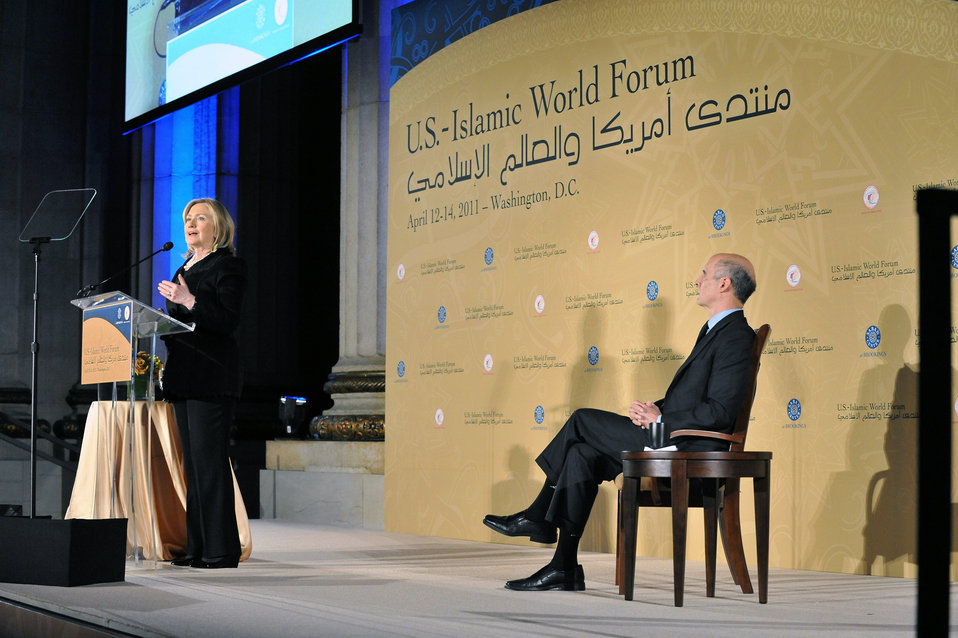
Secretary Clinton Delivers Remarks at U.S.-Islamic World Forum

U.S. Secretary of State Hillary Rodham Clinton delivers remarks at the U.S.-Islamic World Forum in Washington, D.C., on April 12, 2011.